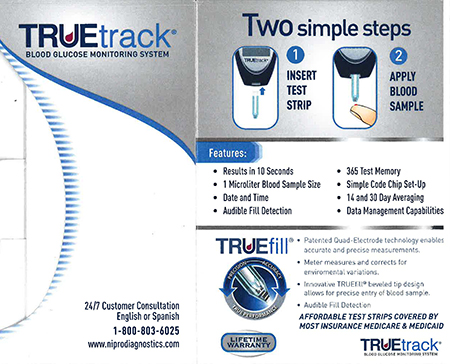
RECALLED – Blood Glucose Meters

January 2, 2014 – Product Recall – Nipro Diagnostics, Inc. Initiates Voluntary Recall of Certain TRUEbalance and TRUEtrack Blood Glucose Meters.